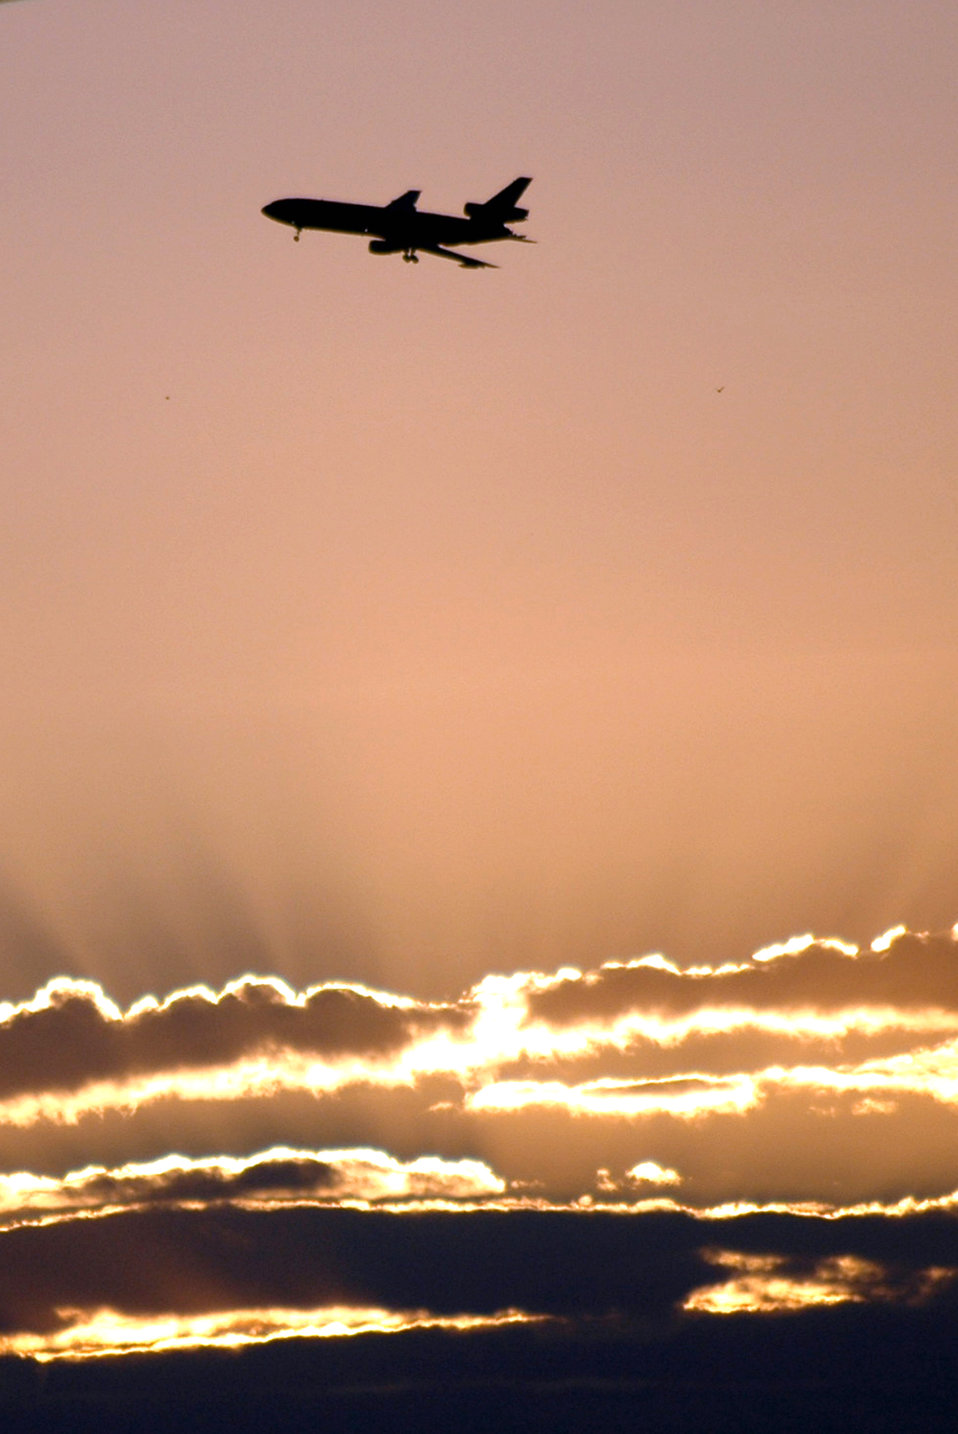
At the end of a long day

A KC-10 Extender refueling aircraft from the 305th Air Mobility Wing at McGuire Air Force Base, N.J., flies over the base on its way back from a mission Oct. 3. The KC-10 is one of the Air Force's main refuelers.